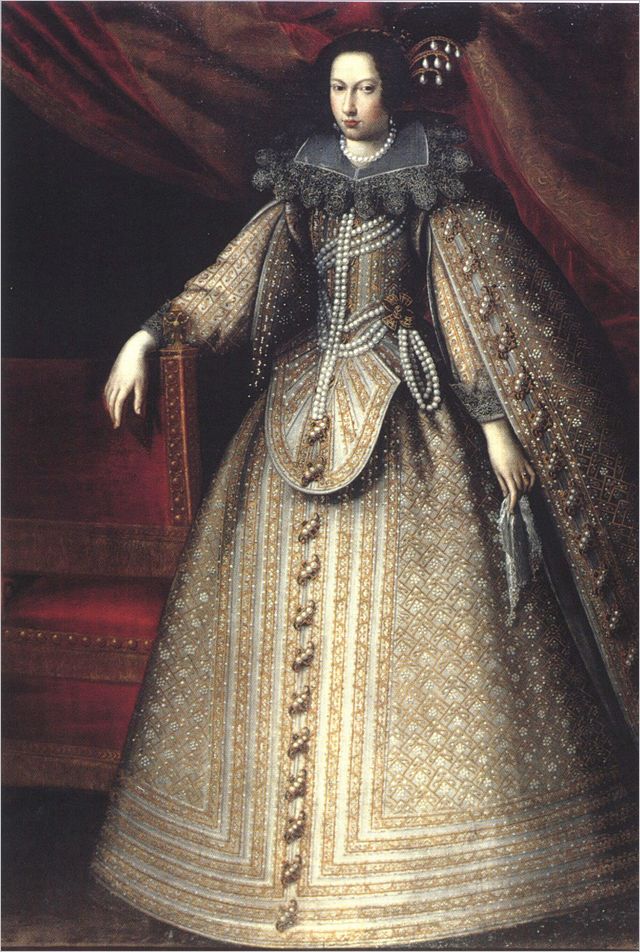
Isabella of Savoy1